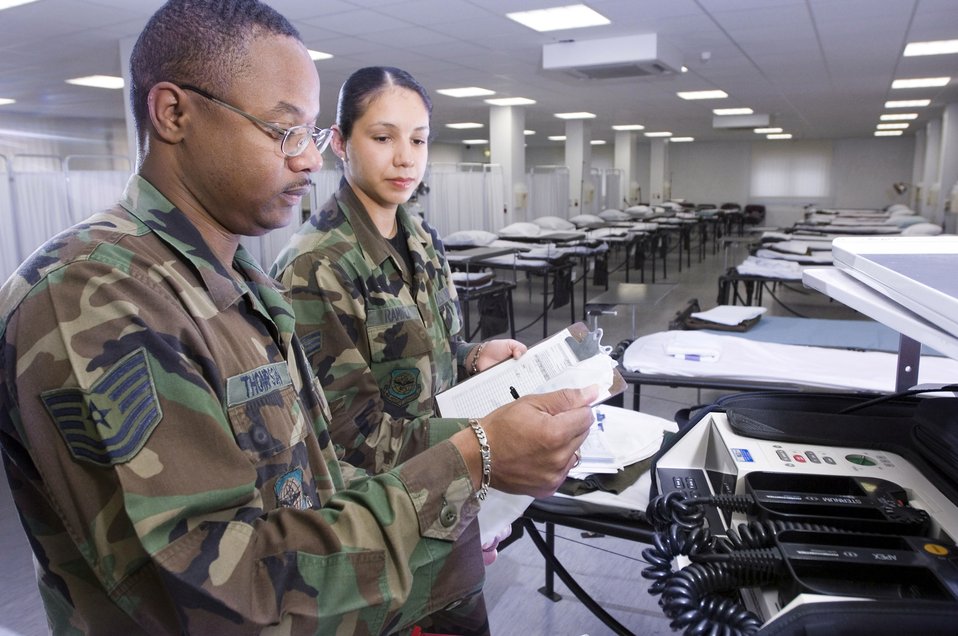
Staging flight sees lull in hectic routine

RAMSTEIN AIR BASE, Germany -- Tech. Sgt. Jonathan Thompson and Senior Airman Laura Ramirez inventory a crash cart at the 435th Contingency Aeromedical Staging Facility here. The staging facility is part of the aeromedical evacuation pipeline. Sergeant Thompson is a medic deployed from Dover Air Force Base, Del., and Airman Ramirez is an Air Force Reserve medic from Lackland Air Force Base, Texas.